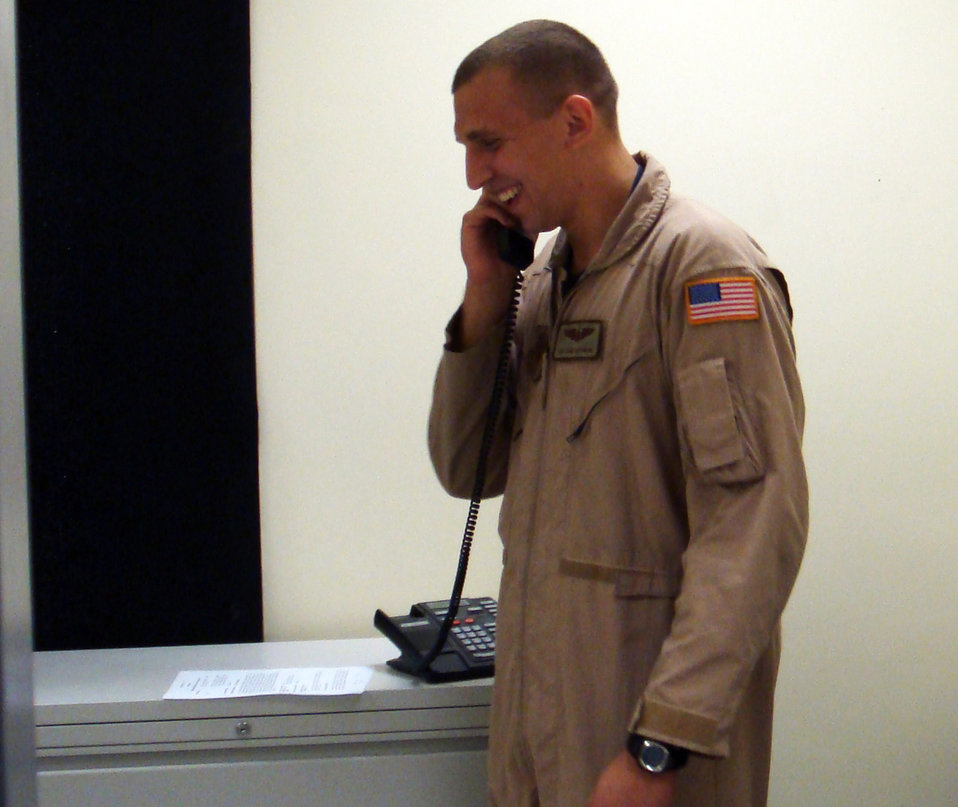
Operation Iraqi Freedom, Operation Enduring Freedom and Joint Task Force-Horn of Africa

Senior Airman Dan Gutowski talks on the phone with President George W. Bush Christmas eve. Airman Gutowski was one of nine servicemembers in the area of responsibility to receive the honor. Airman Gutowski is a 816th Expeditionary Airlift Squadron loadmaster.